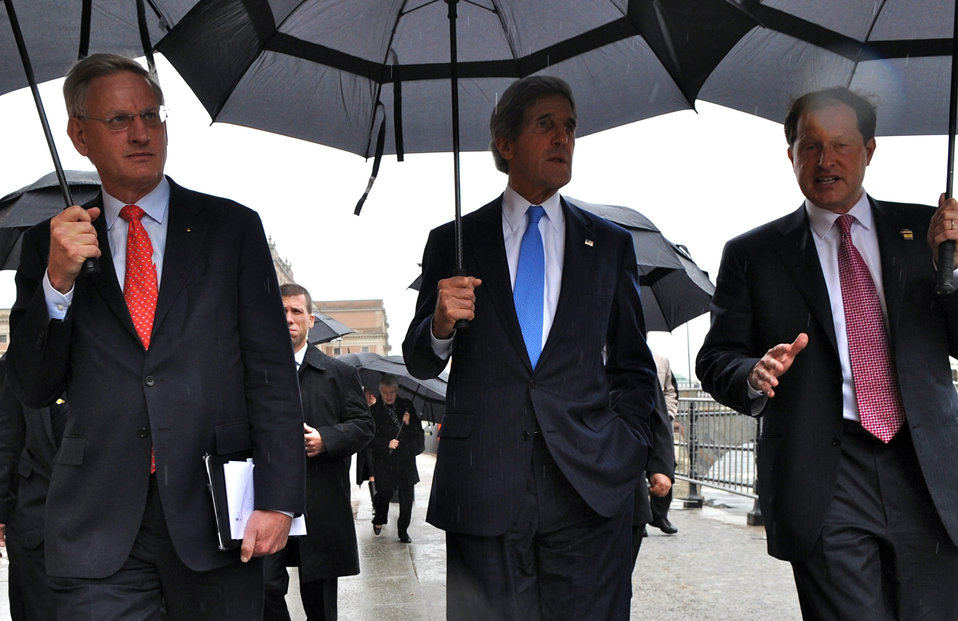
Secretary Kerry Walks to Swedish Prime Minister Reinfeldt's Office

Swedish Foreign Minister Carl Bildt, U.S. Secretary of State John Kerry, and U.S. Ambassador to Sweden Mark Brzezinski walk along the Strommen en route to a meeting with Swedish Prime Minister Fredrik Reinfeldt on May 14, 2013 in Stockholm, Sweden.